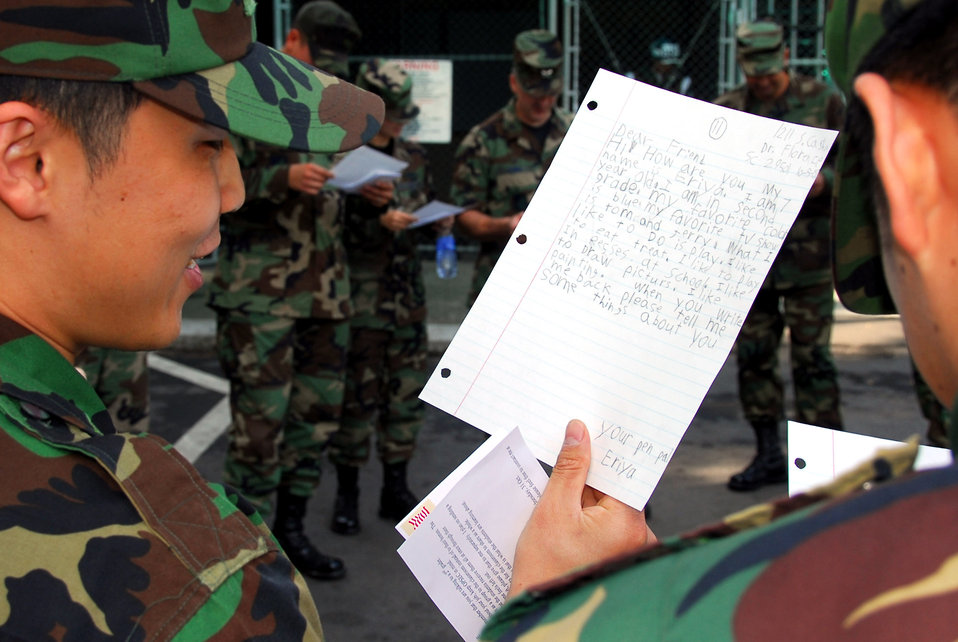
By the letter: Airmen help students by being pen pals

Airmen read letters from 2nd grade students at Delmae Heights Elementary School, S.C., Oct. 26 at Osan Air Base, Republic of Korea. Tech. Sgt. C.J. Baker, who is with the 607th Air Intelligence Squadron, and teacher Veronica Flowers, started a program in which Osan Airmen will be pen pals for one year with her 20 students.